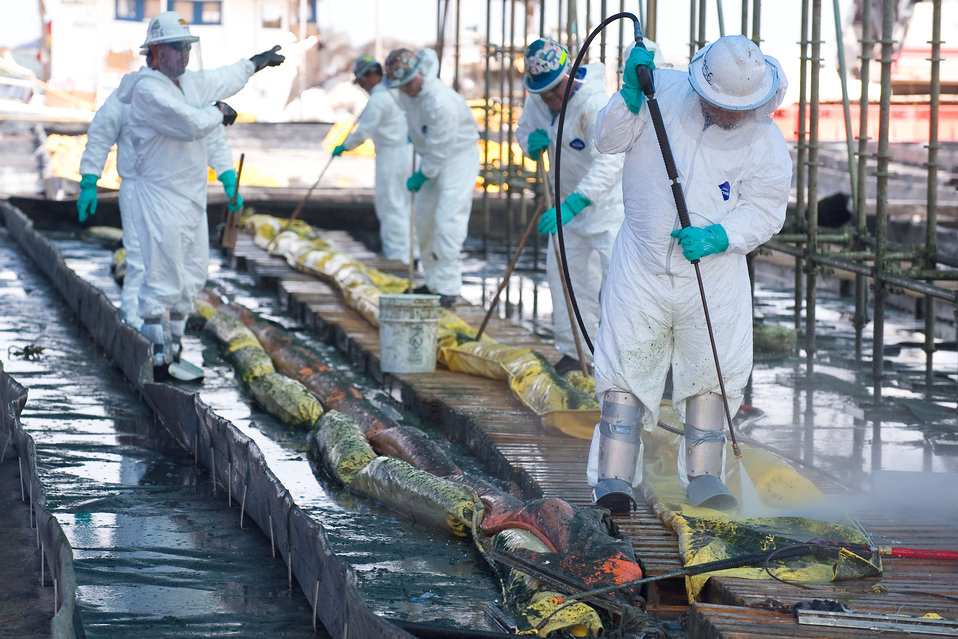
August 7, Over 2.1 million feet of oil boom deployed

Pressure washing used oil boom.